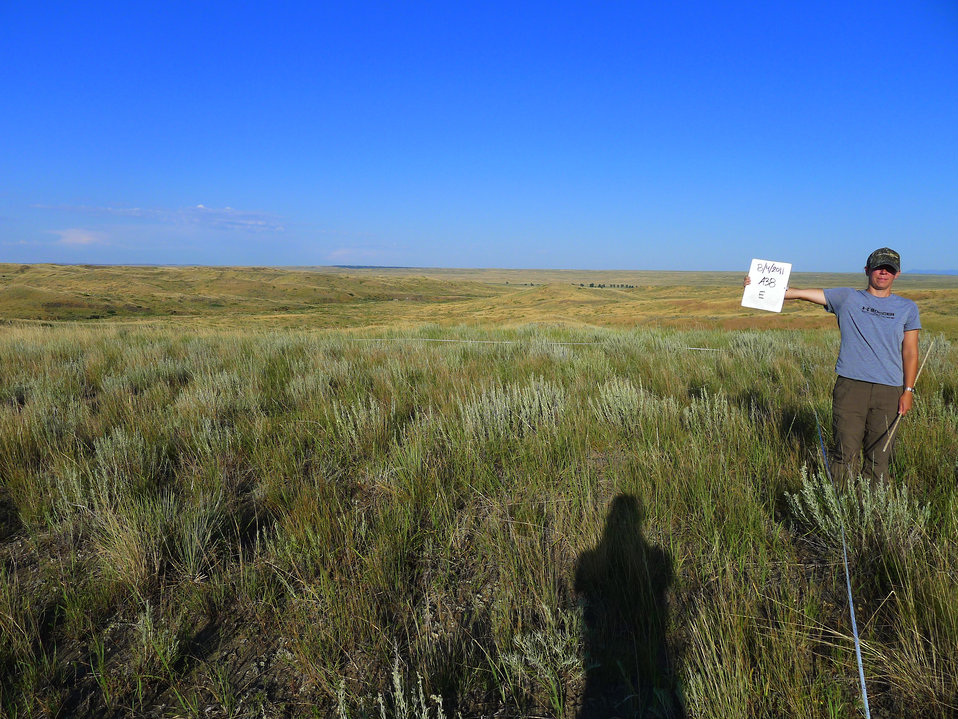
Charles M. Russell National Wildlife Refuge, MT

2011 Wilderness Fellow Erin Clark recording plots